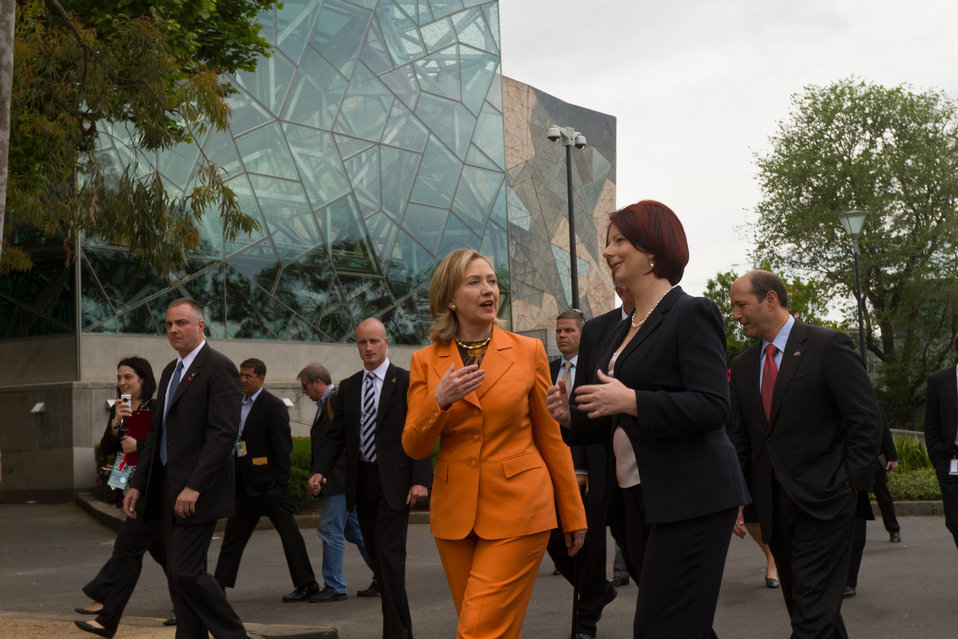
Australian Prime Minister Gillard and Secretary Clinton Walk to Lunch in Melbourne

Australian Prime Minister Julia Gillard, right, chats with U.S. Secretary of State Hillary Rodham Clinton while walking to lunch through Federation Square in Melbourne, Australia, on November 7, 2010. U.S. Ambassador to Australia Jeff Bleich is featured behind Australian Prime Minister Gillard.